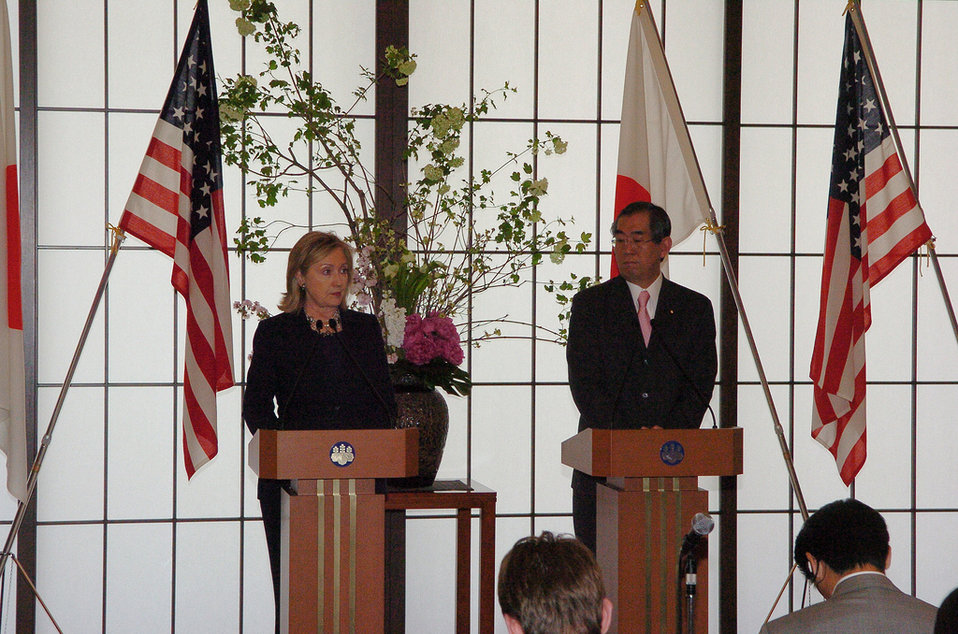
Secretary Clinton and Japanese Foreign Minister Matsumonto Address the Press

U.S. Secretary of State Hillary Rodham Clinton addresses the press during a joint press conference with Japanese Foreign Minister Takeaki Matsumoto at the Iikura Guest House in Tokyo, Japan, on April 17, 2011.